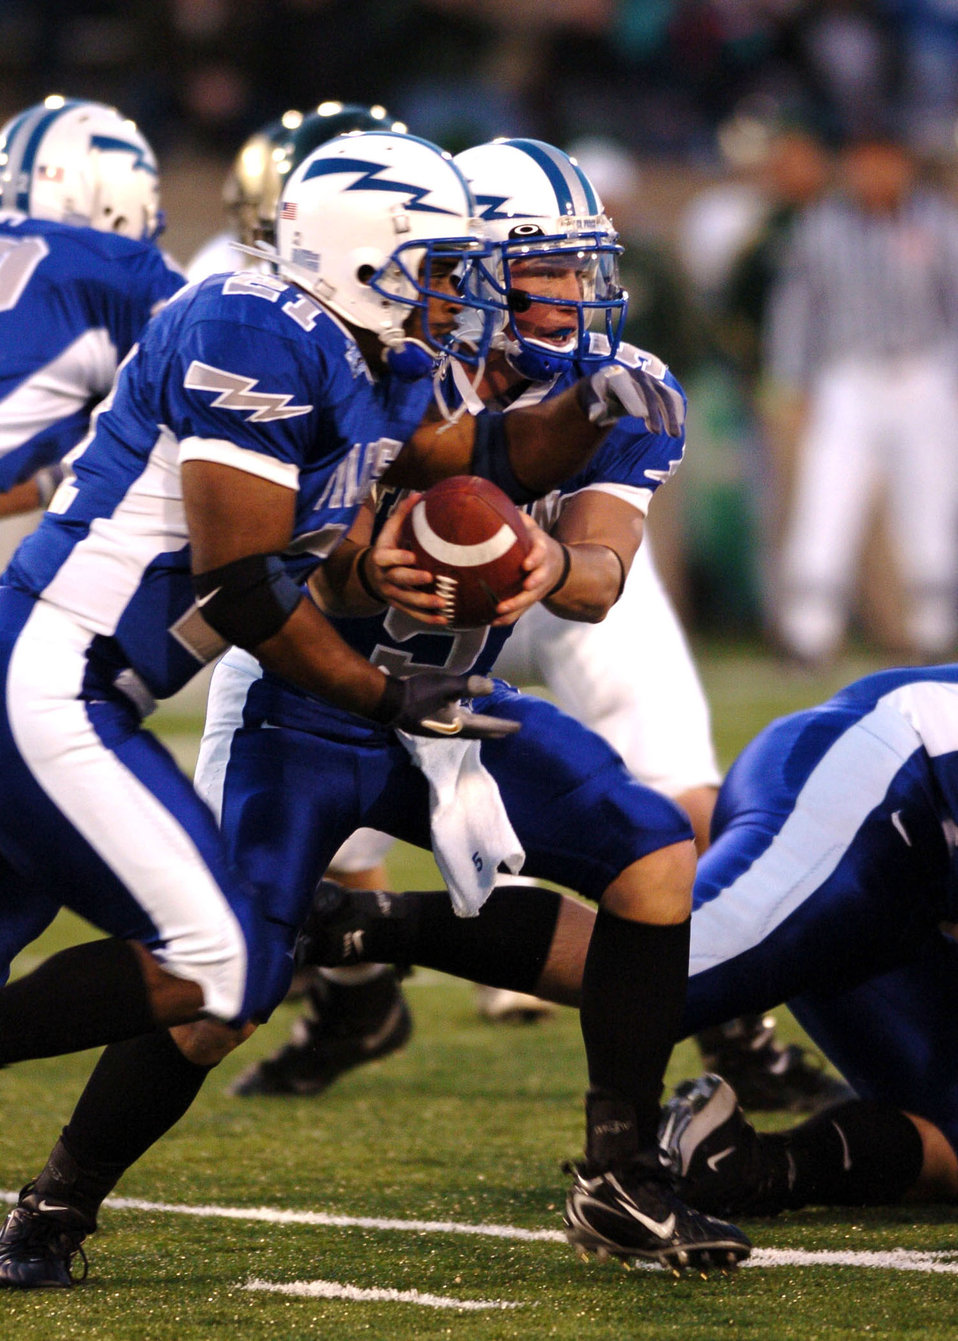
Comeback Trail

Air Force quarterback Shaun Carney hands off to fullback Ryan Williams Thursday night against cross-state rival Colorado State. After trailing at halftime 21-3, Air Force scored 21 unanswered points in the second half to win, 24-21.